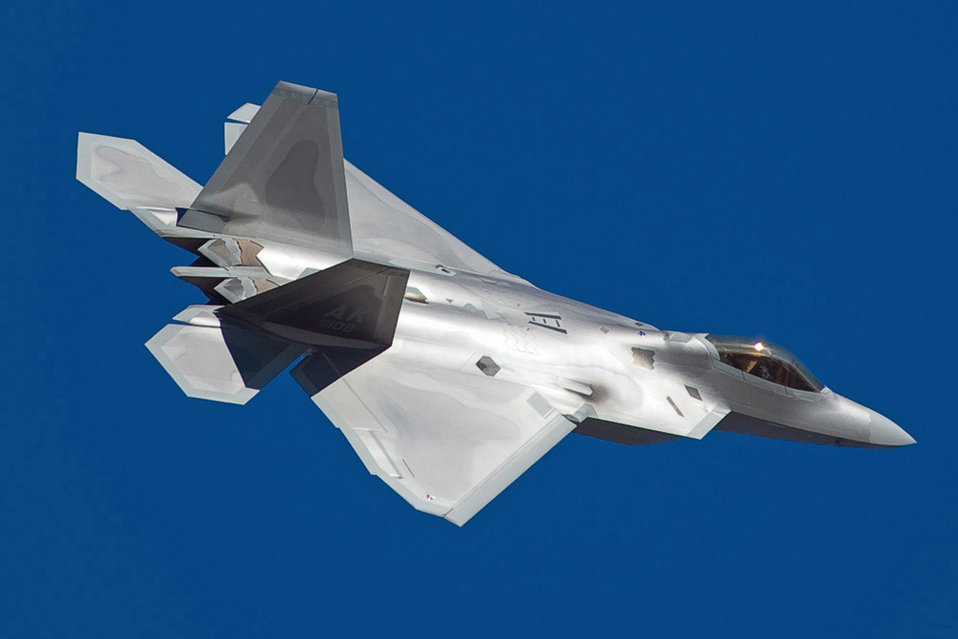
F-22As scheduled to deploy to Japan, Guam

Air Force officials have scheduled to deploy two contingents of F-22A Raptors to the Pacific theater in January 2009 for approximately three months. Current plans call for 12 of the fighters to deploy to Kadena Air Base, Japan, from Langley Air Force Base, Va., and another 12 to deploy to Andersen Air Force Base, Guam, from Elmendorf Air Force Base, Alaska. The deployments support U.S. Pacific Command's theater security packages in the Western Pacific.